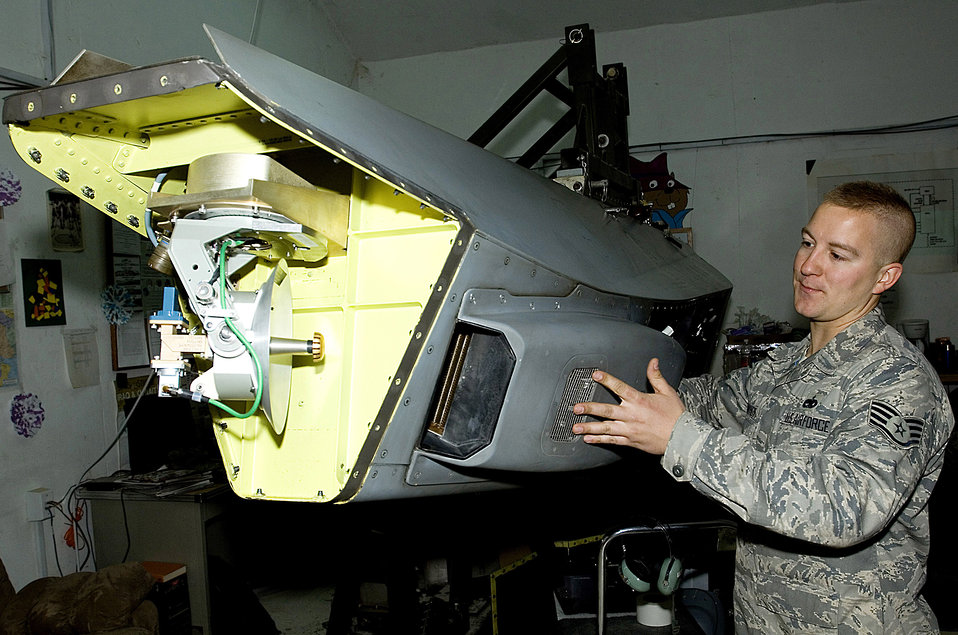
TARS pod brings picture into focus

Staff Sgt. George Suonvieri checks out a Theater Airborne Reconnaissance System pod held in place by a giraffe stand Dec. 21 at Joint Base Balad, Iraq. Ground commanders use TARS imagery to achieve their tactical objectives. Sergeant Suonvieri is one of four 332nd Expeditionary Aircraft Maintenance Squadron avionics maintainers responsible for the 332nd Expeditionary Fighter Squadron's TARS pods. Sergeant Suonvieri, a native of Duluth, Minn., is deployed from the Minnesota Air National Guard's 148th Fighter Wing.